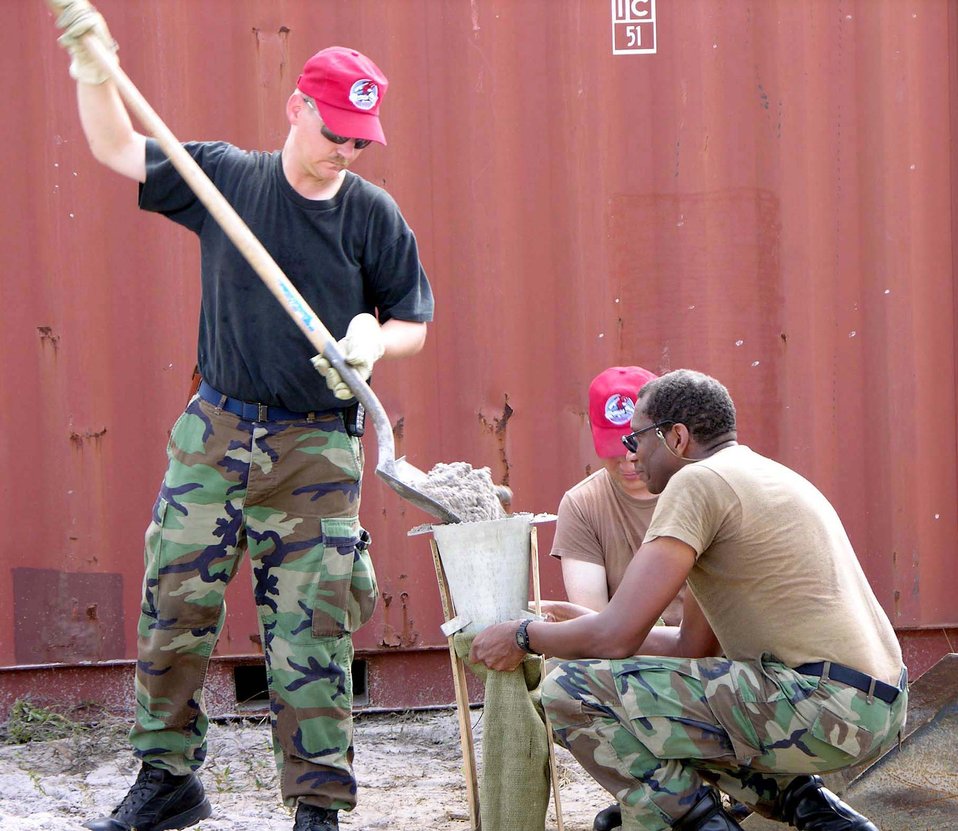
New horizons in Guyana

CAMP STEPHENSON, Guyana -- Tech. Sgt. Robert Nydam fills sandbags for securing tents here during exercise New Horizons 2004-Guyana. About 200 U.S. Airmen, Soldiers and Sailors are participating in the joint training exercise co-sponsored by the U.S. Southern Command and the Guyana defense force. A combined team of engineers and medics are working on construction projects and medical-training activities. Sergeant Nydam is assigned to the 820th Red Horse Squadron at Nellis Air Force Base, Nev.